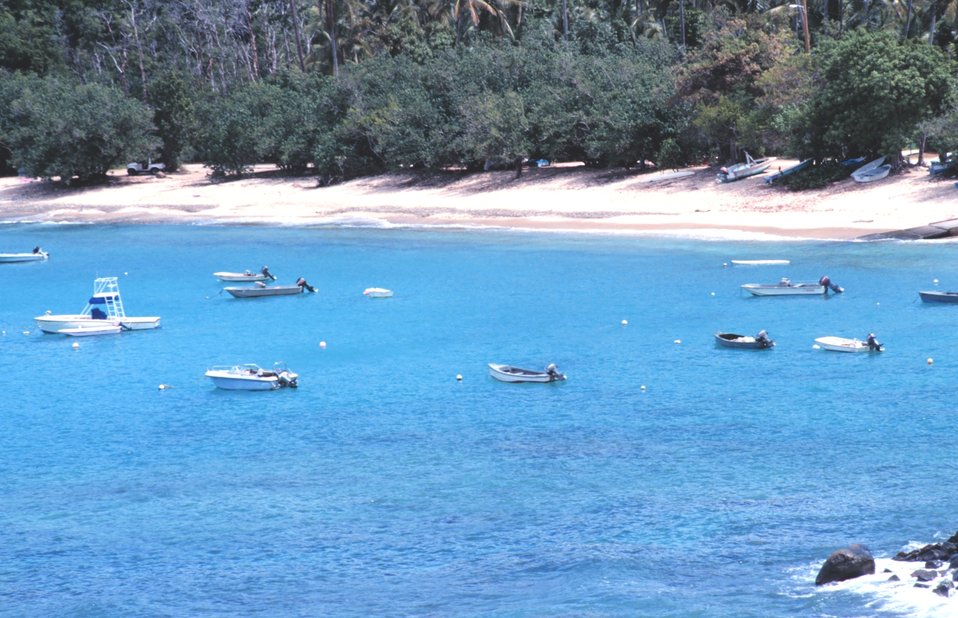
A quiet bay off St. Thomas